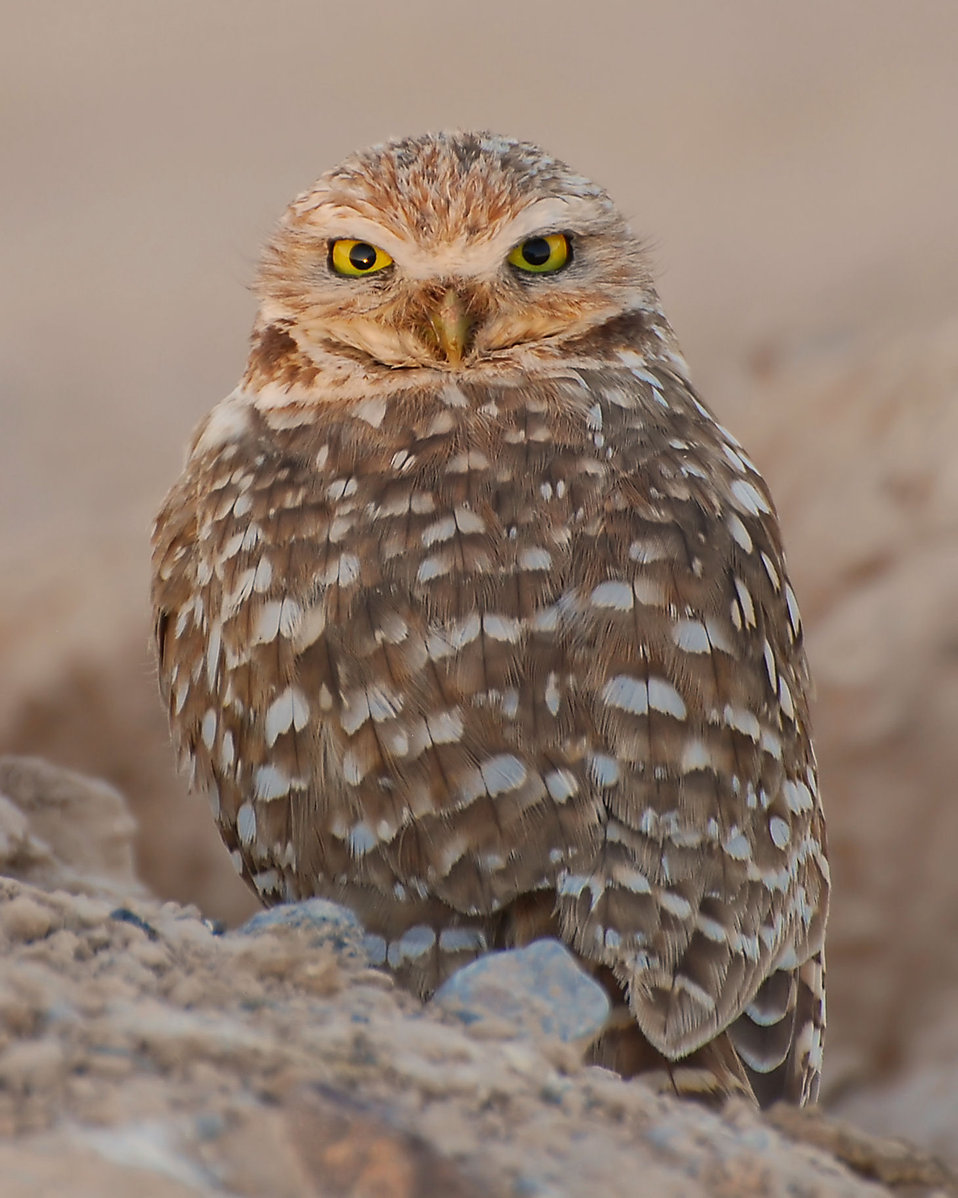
Burrowing Owl near Las Vegas, Nevada